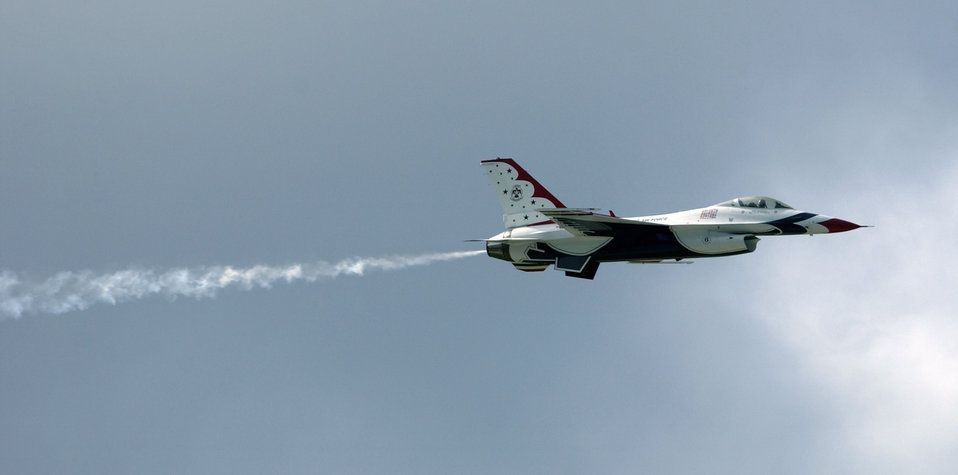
Thunderbirds

ANDERSEN AIR FORCE BASE, Guam -- The United States Air Force Demonstration Team